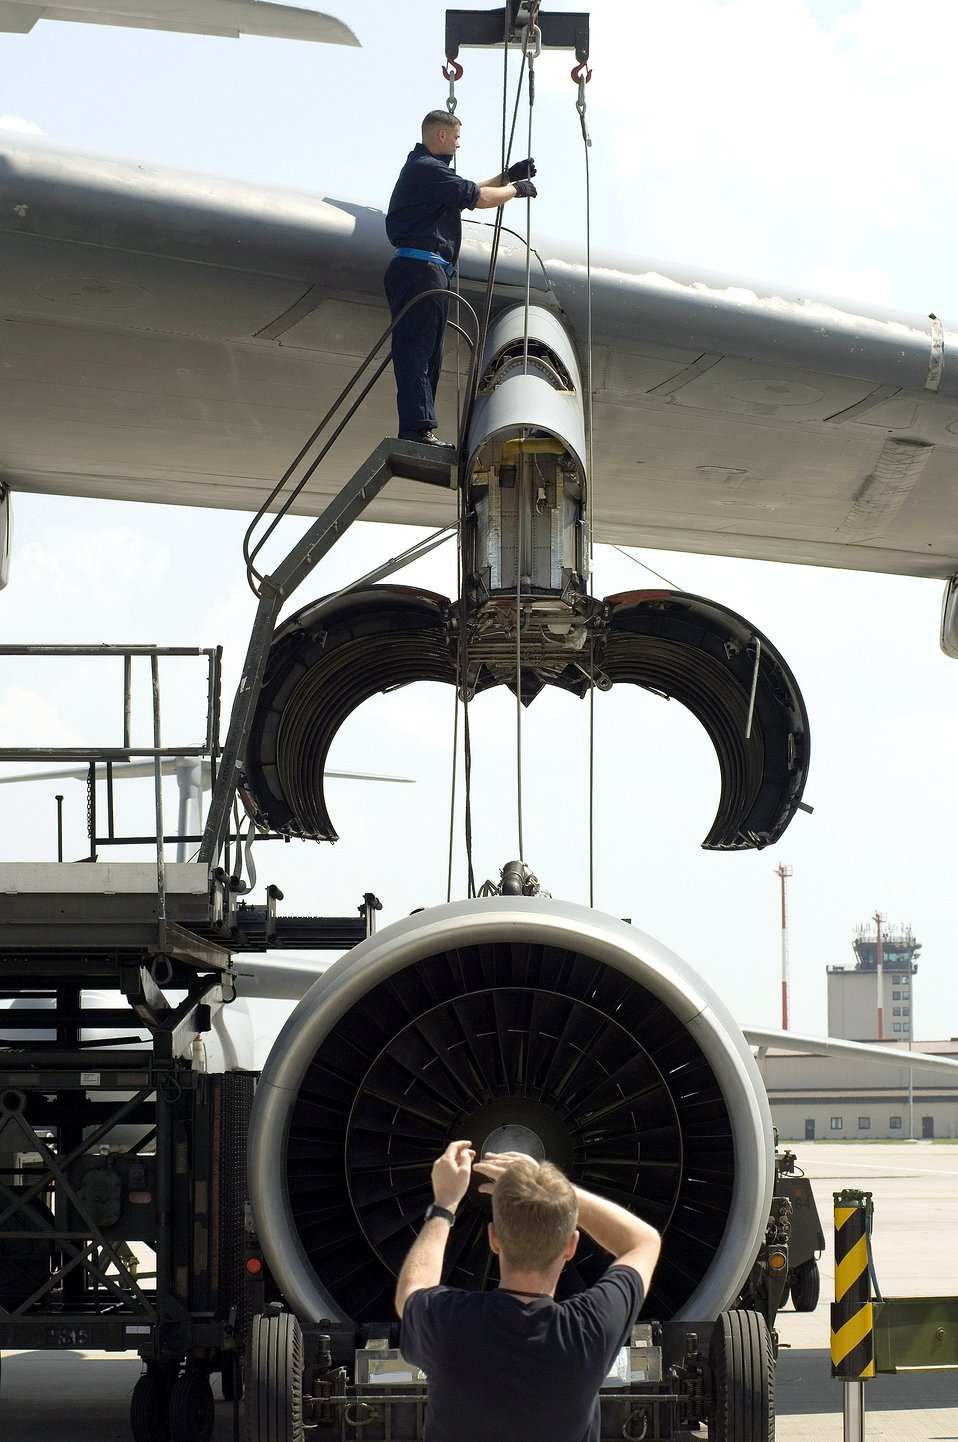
Maintainers keep C-5s flying

Staff Sgt. Sean Donovan (top) centers cables while preparing to mount an engine on a C-5 Galaxy on May 12, 2006, at Ramstein Air Base Germany. Sergeant Donovan is a jet engine mechanic assigned to the 723rd Air Mobility Squadron.